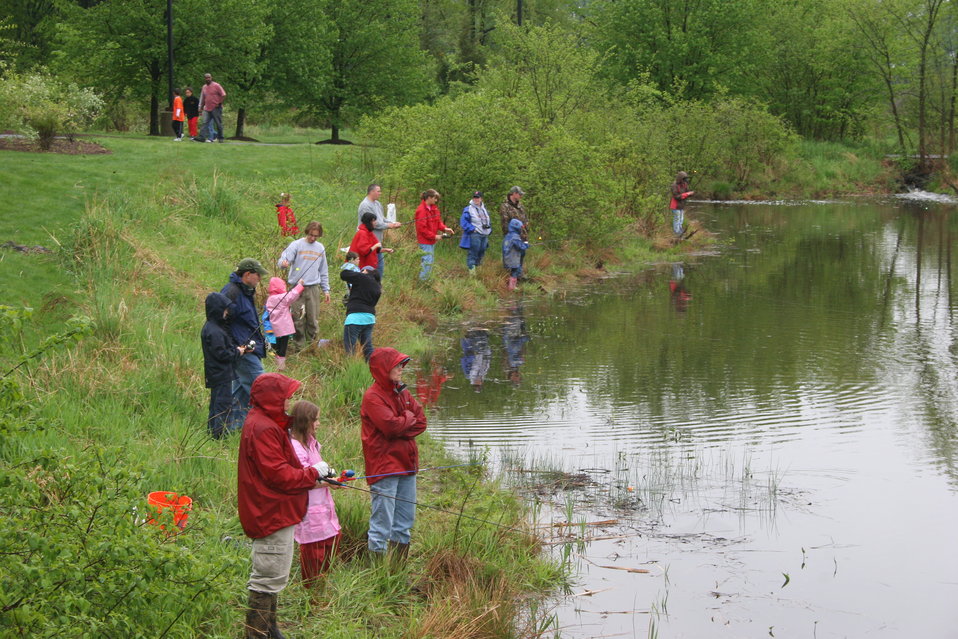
Fishing event at U.S. Fish and Wildlife Service Regional Office in Hadley, MA